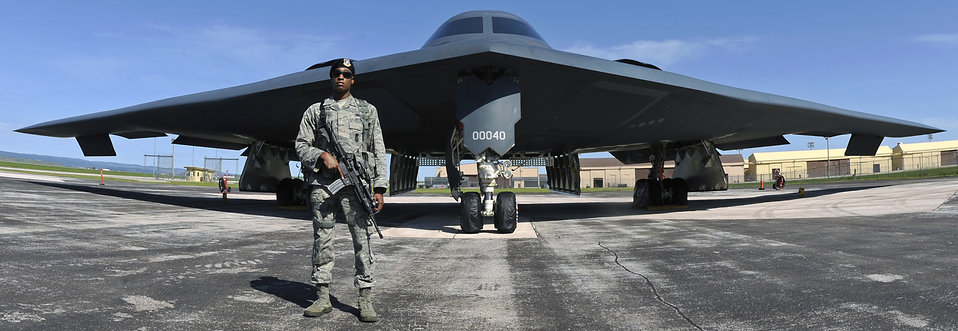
Stay away from the plane

An Airman guards a B-2 Spirit June 4, 2011, during the 2011 Dakota Thunder air show at Ellsworth Air Force Base, S.D.